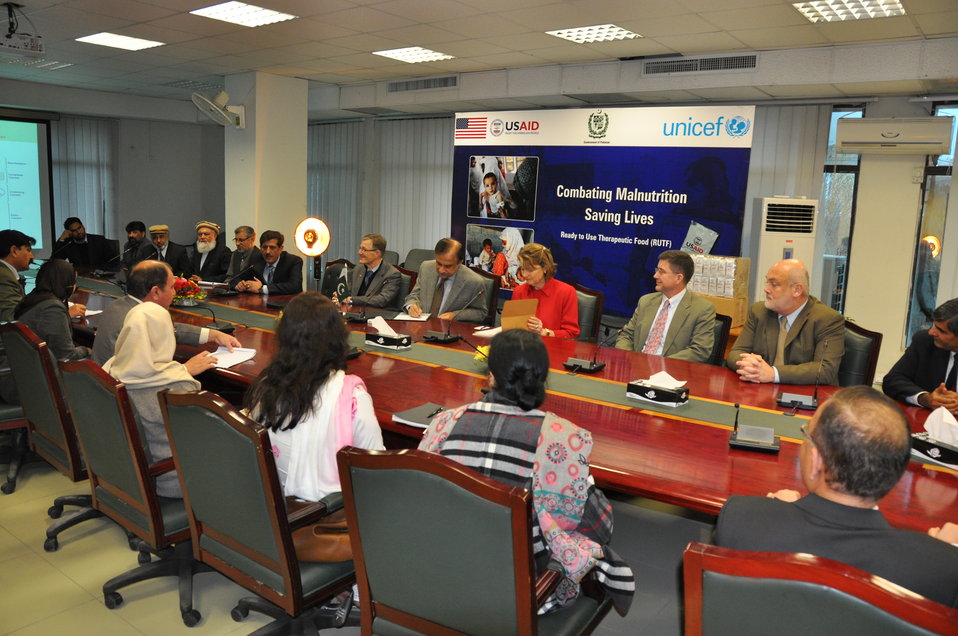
Handover of RUTF 03

USAID Deputy Mission Director Nancy Estes presented 1,330 metric tons of Ready to Use Therapeutic Food to UNICEF Pakistan Country Director Dr. Dan Rohrmann. Mr. Imtiaz Inayat Ellahi, Federal Secretary, Ministry of National Health Services, Regulation and Coordination, was also present at the occasion.